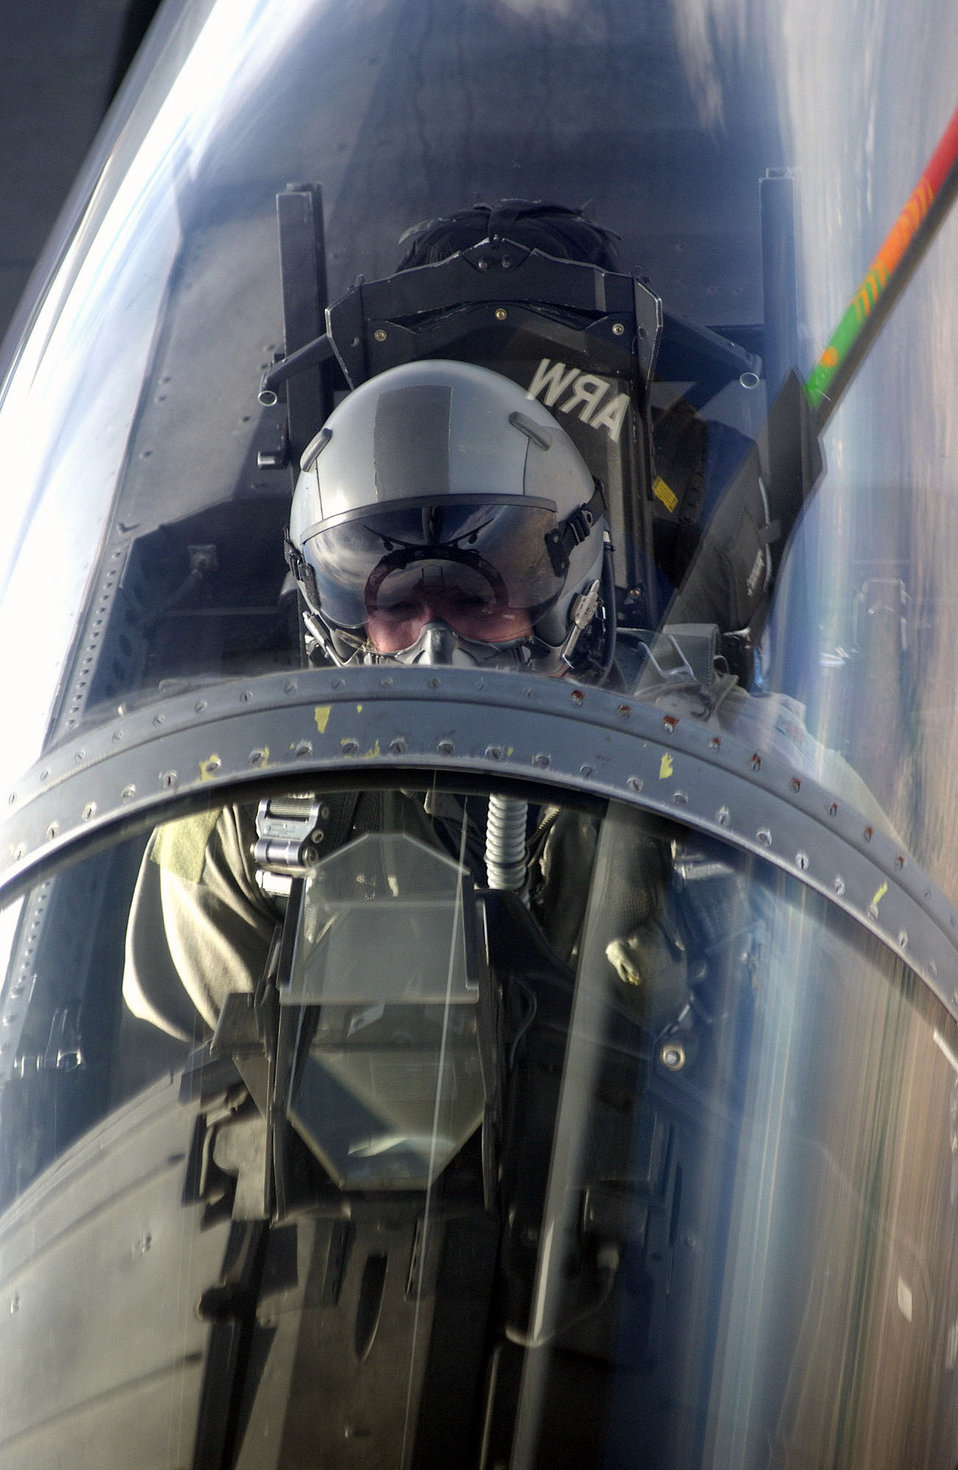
Konichiwa

NELLIS AIR FORCE BASE, Nev. -- An F-15C pilot from Kadena Air Base, Japan slides up to the boom of a KC-135 Stratotanker to refuel during Red Flag 04 here.